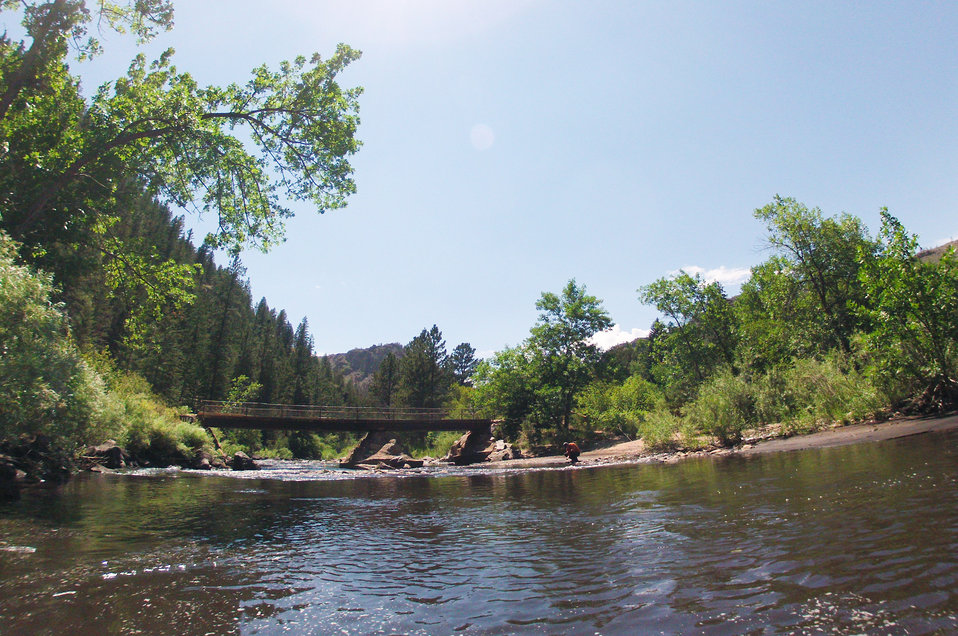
U.S. Department of Agriculture District Conservationist Todd Boldt digs down into the riverbanks and finds ash 18 inches below the surface, at the water’s edge; a result of the Hewlett Gulch Fire (May 14, 2012), in the Poudre Canyon area, near Fort Collins, Colorado on Friday; July 20; 2012. Unmitigated runoff has turned the water in this river from clear to nearly black heavily laden with ash, silt, and burnt debris that recent thunderstorms have washed down from the mountainsides. At its peak more than 400 firefighters were battling fires pushed by 50 mph winds. When the last embers were cooled, more than 12-square miles lay blackened at a cost of approximately 3.2 million dollars to fight. The aerial distribution of straw has successfully kept nearby Seaman Reservoir clean for the drinking water of the City of Greeley. Forest Service lands receive straw; while private and other lands receive a seed mix and straw to promote ground cover plant growth on ash-covered lands. In total; 1; 800 tons of straw will be applied during the 14-day operation. One quarter of the cost was paid by the City of Greeley and the U.S. Department of Agriculture funded the remainder.